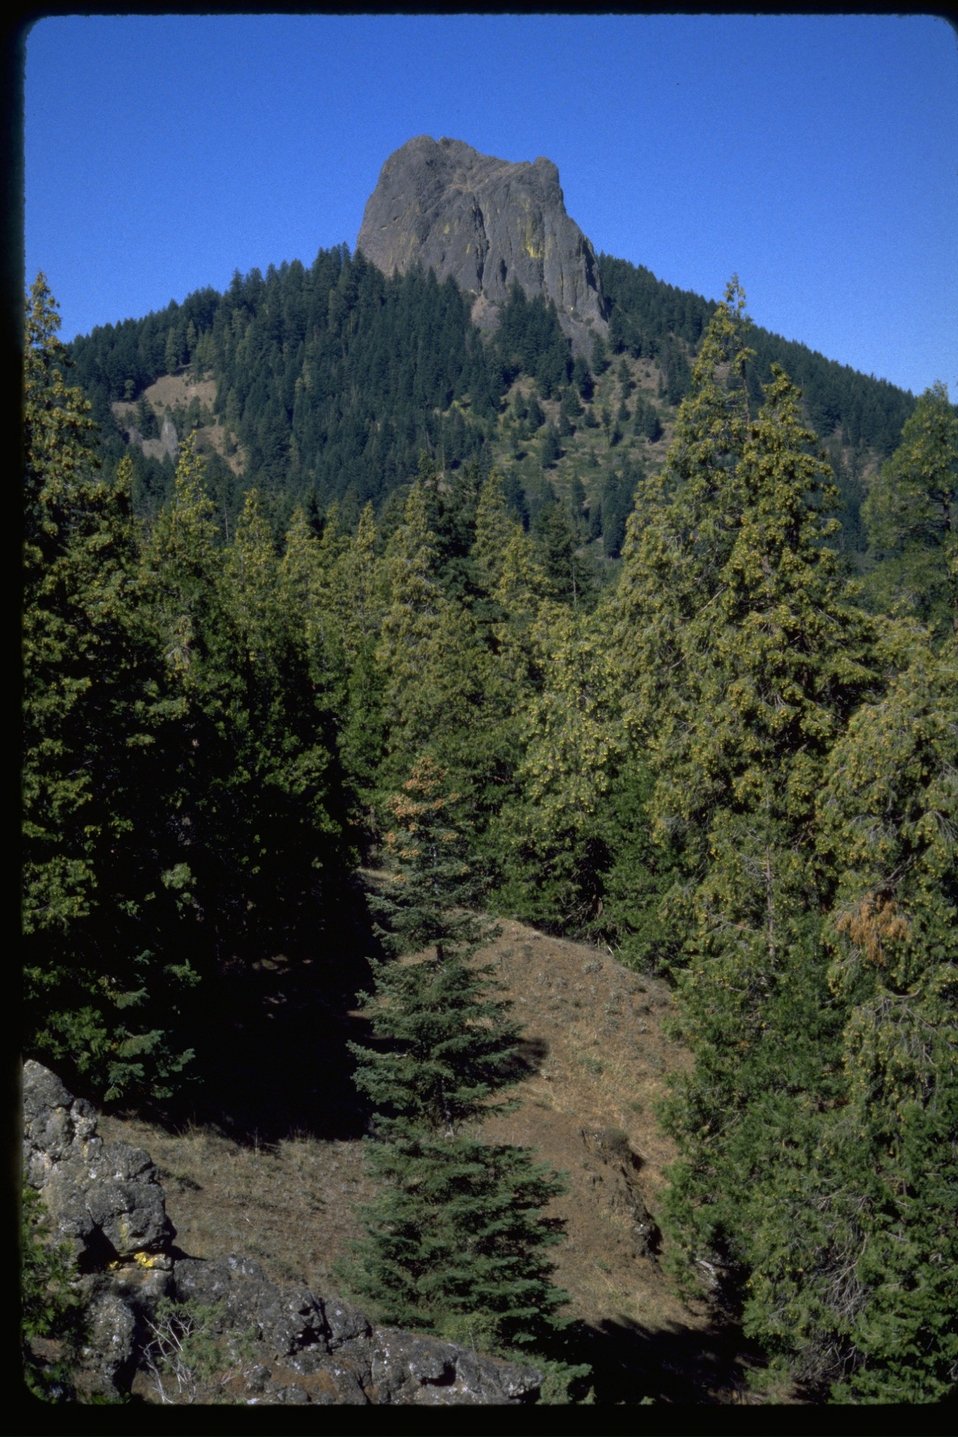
Pilot Rock from Hutton/Slide Creek.